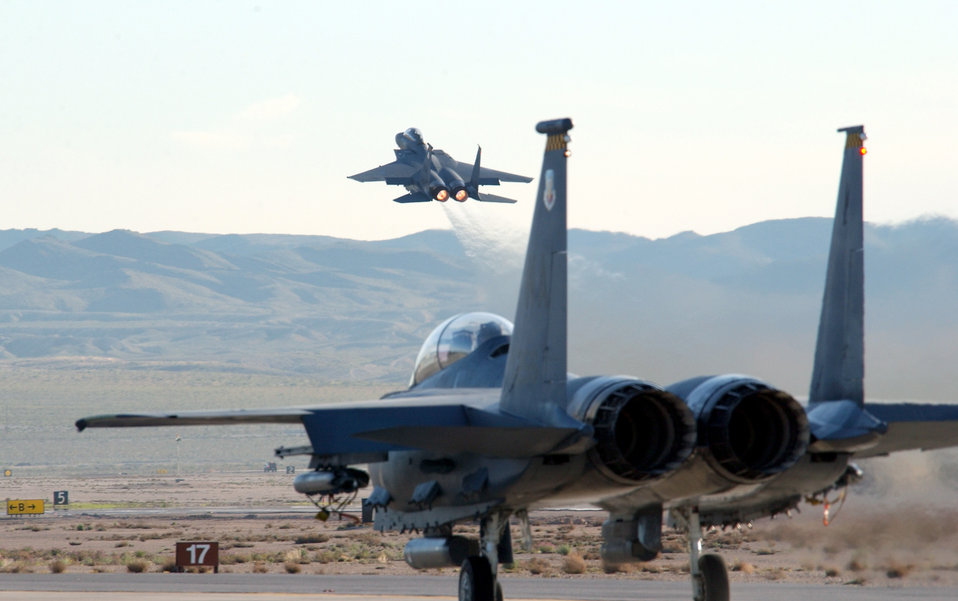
Into the wild blue yonder

NELLIS AIR FORCE BASE, Nev. -- An F-15 Eagle takes off into the morning sky as another one taxis out on the tarmac. Aircraft, aircrews, maintainers and support Airmen from around the world are here participating in Red Flag, an exercise that tests warfighting skills in real-time combat situations.